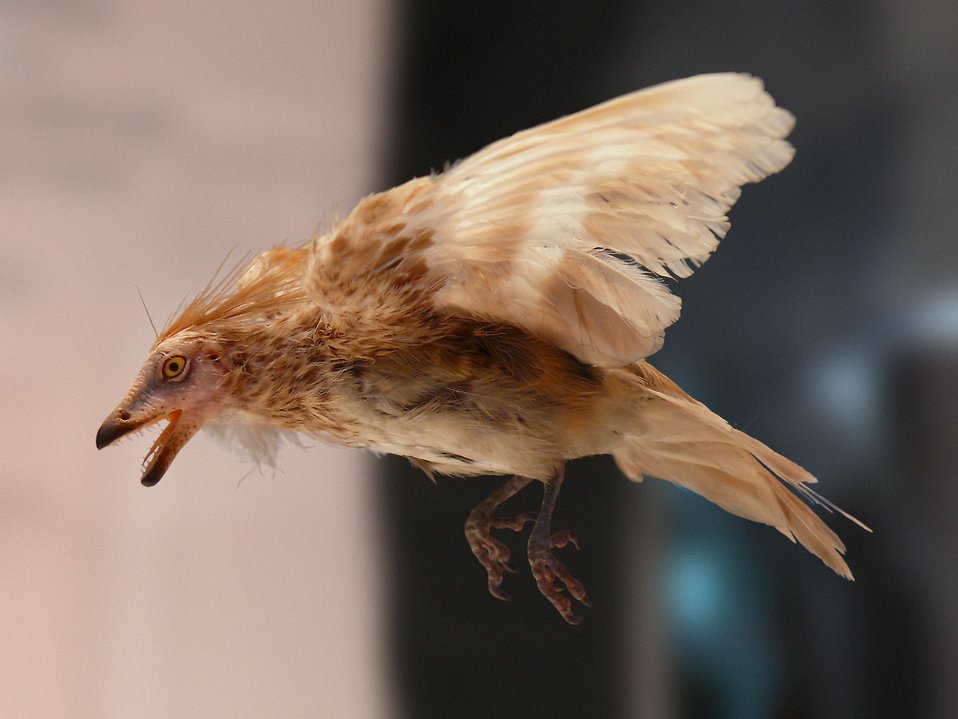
Español: Reconstrucción de un Iberomesornis expuesto en el Museo Nacional de Ciencias Naturales de Madrid